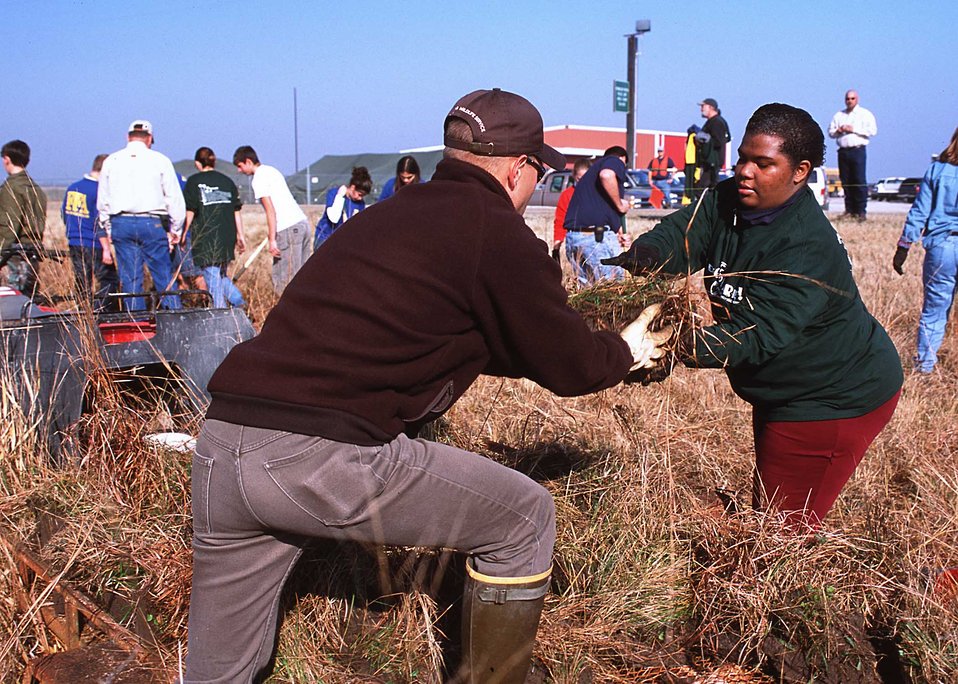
Earth team volunteers of NRCS help transplant native prairie plants from a roadside near Gueydan, Louisiana, to a restored wetland nearby.